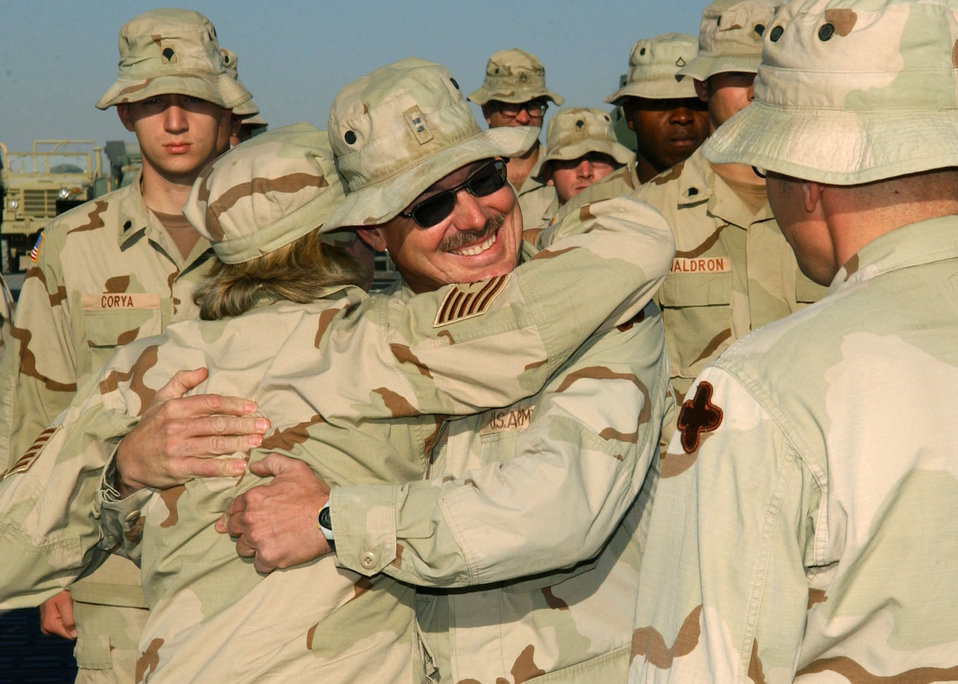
Sibling reunion 'sweet' for Air Force reservist

KANDAHAR AIRFIELD, Afghanistan -- Tech. Sgt. Rebecca Jo Allen hugs her newly promoted brother, Chief Warrant Officer Tim Gaby. She is a passenger terminal nightshift manager assigned to the 455th Expeditionary Logistics Readiness Squadron at Bagram Air Base, Afghanistan. Chief Gaby is an ammunition supply point accountable officer assigned to the 221st Ordnance Co.